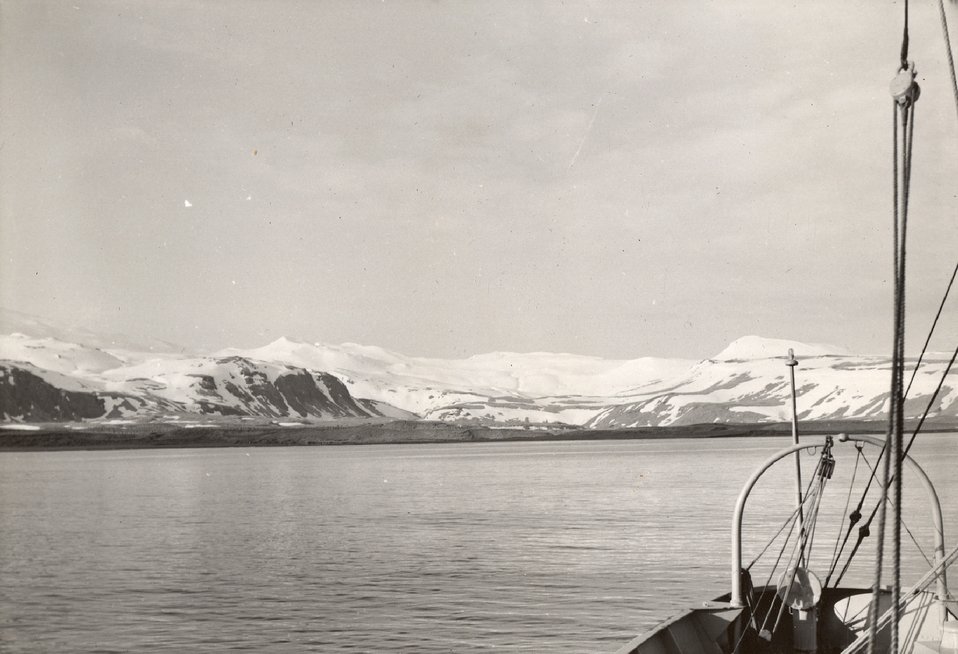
Coastal view.